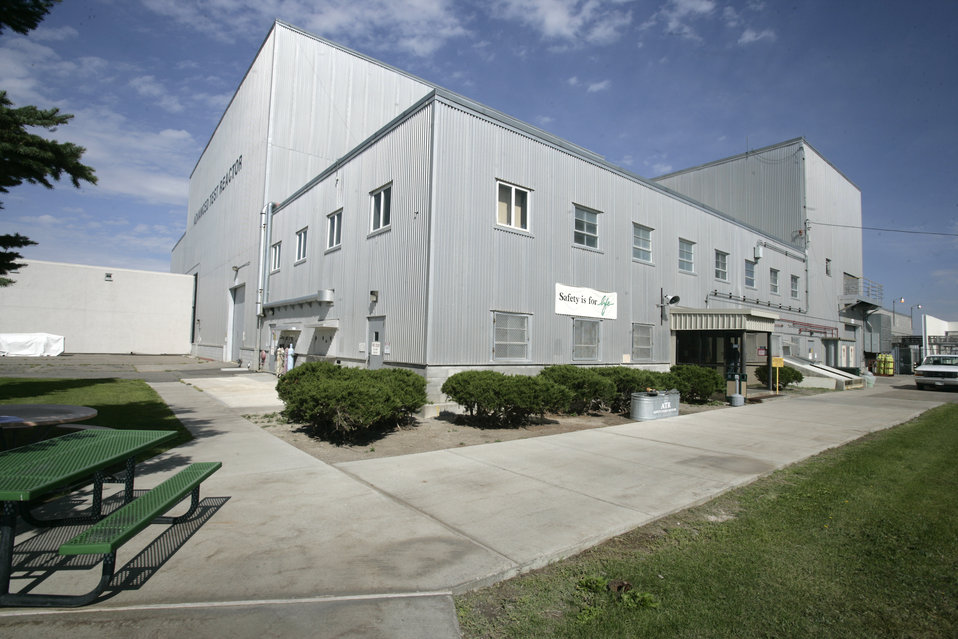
INL THE ADVANCED TEST REACTOR HAS BEEN TESTING FUELS MATERIALS FOR THE NUCLEAR NAVY, GOVERNMENT AND COMMERCIAL INDUSTRY SINCE 1967. THE FACILITY ALSO PRODUCES VALUABLE MEDICAL AND INDUSTRIAL ISOTOPES.